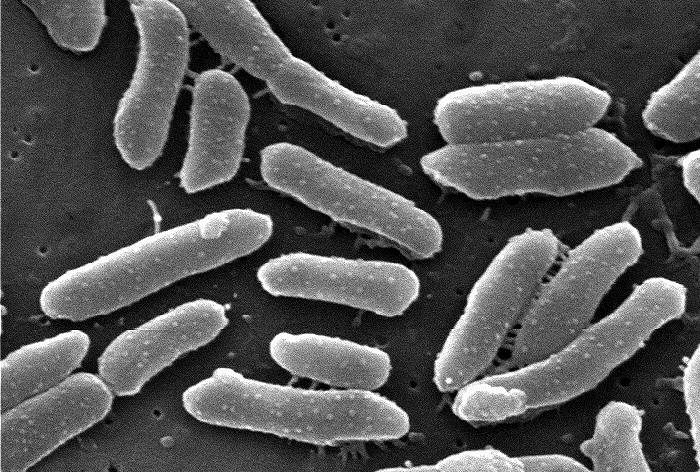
Scanning electron micrograph (SEM) of Gram-negative Providencia alcalifaciens bacteria.